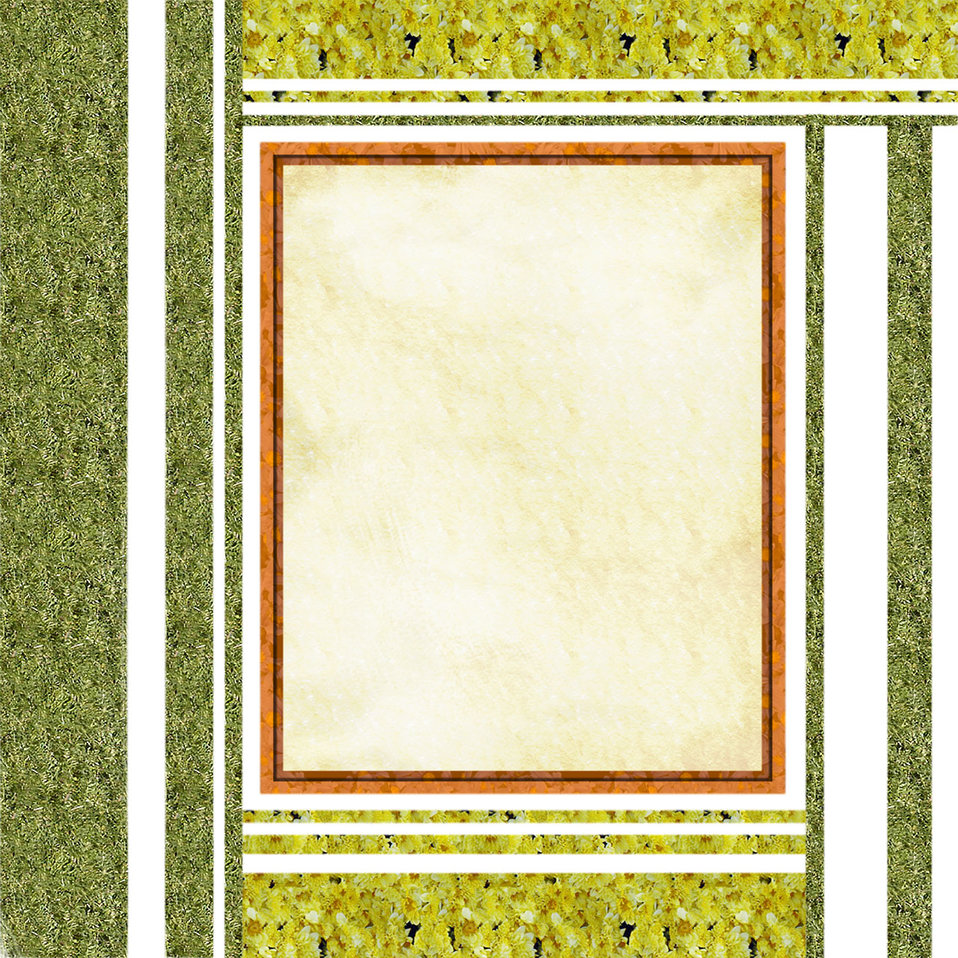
Natural background frame

Textured paper image inside a natural textured frame.